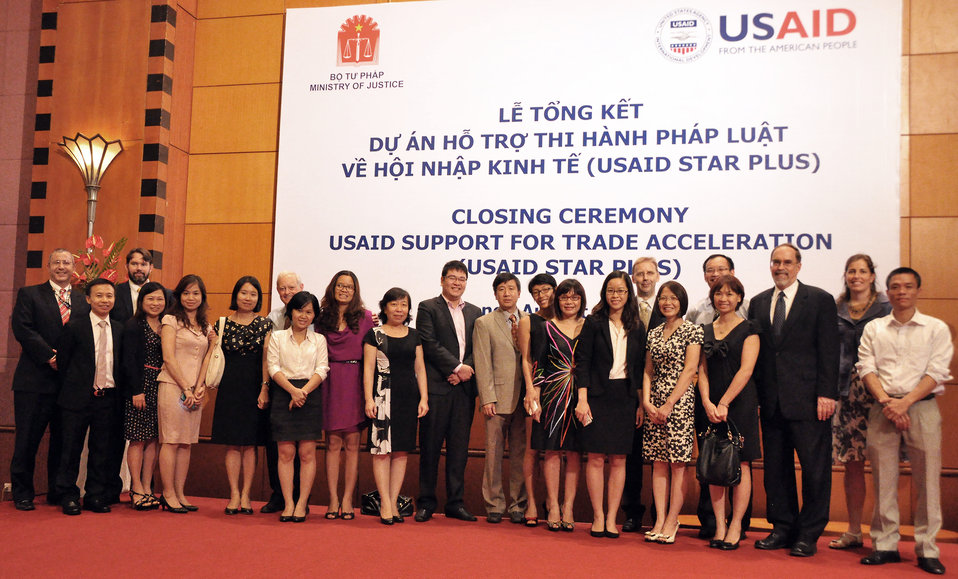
USAID's Support for Trade Acceleration Project (USAID STAR Plus) Closing Ceremony

Hanoi, August 26, 2013.